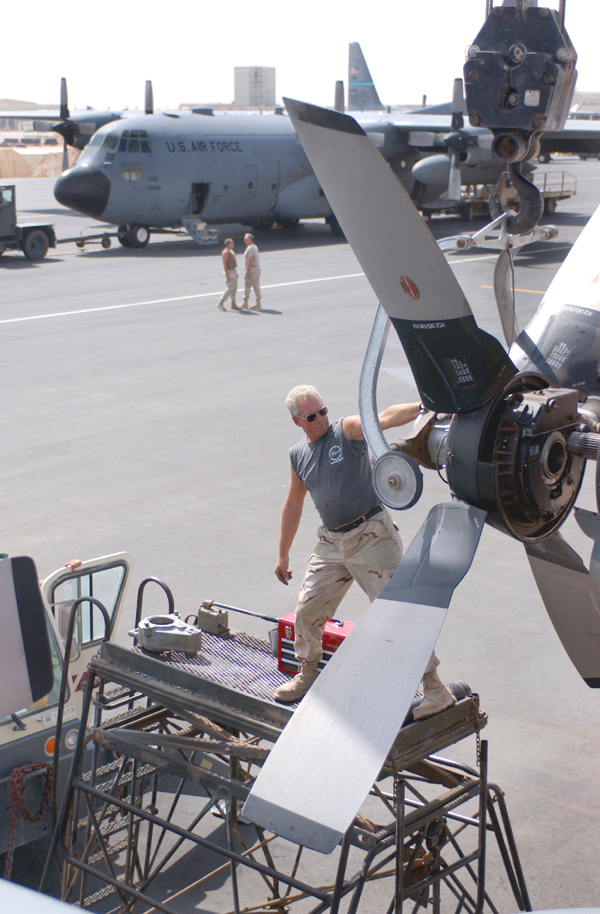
Propeller removal

OPERATION IRAQI FREEDOM -- Tech. Sgt. Leo Batliner guides a propeller assembly off the engine during routine maintenance on a C-130 Hercules. Batliner is from the Missouri Air National Guard's 139th Airlift Wing supporting Operation Iraqi Freedom from a forward-deployed location in Southwest Asia.